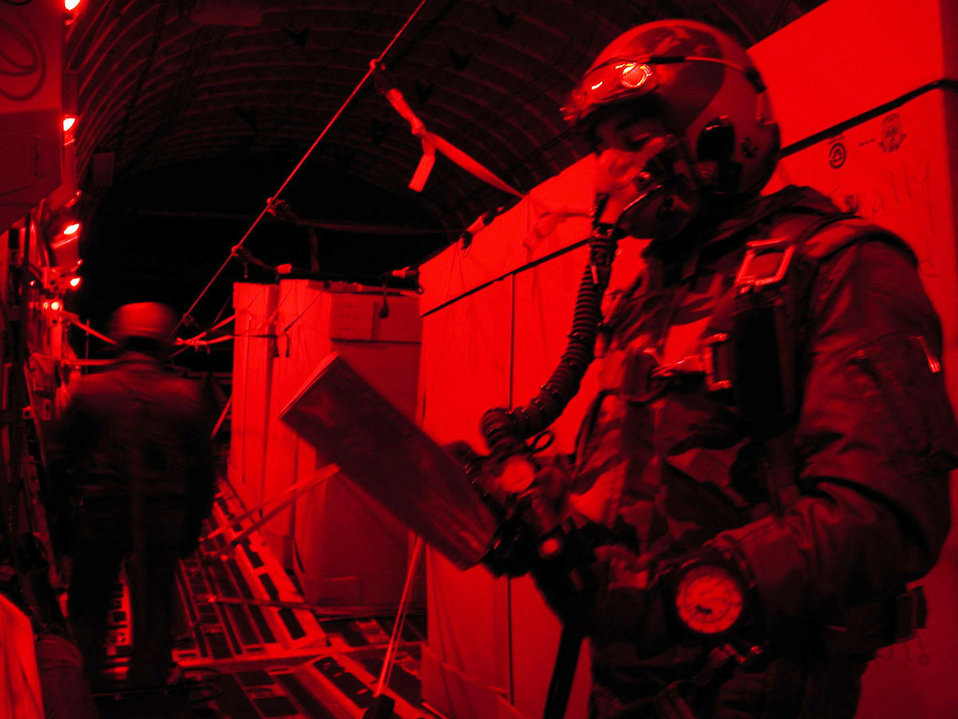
Happy Meal Drop

OPERATION ENDURING FREEDOM --